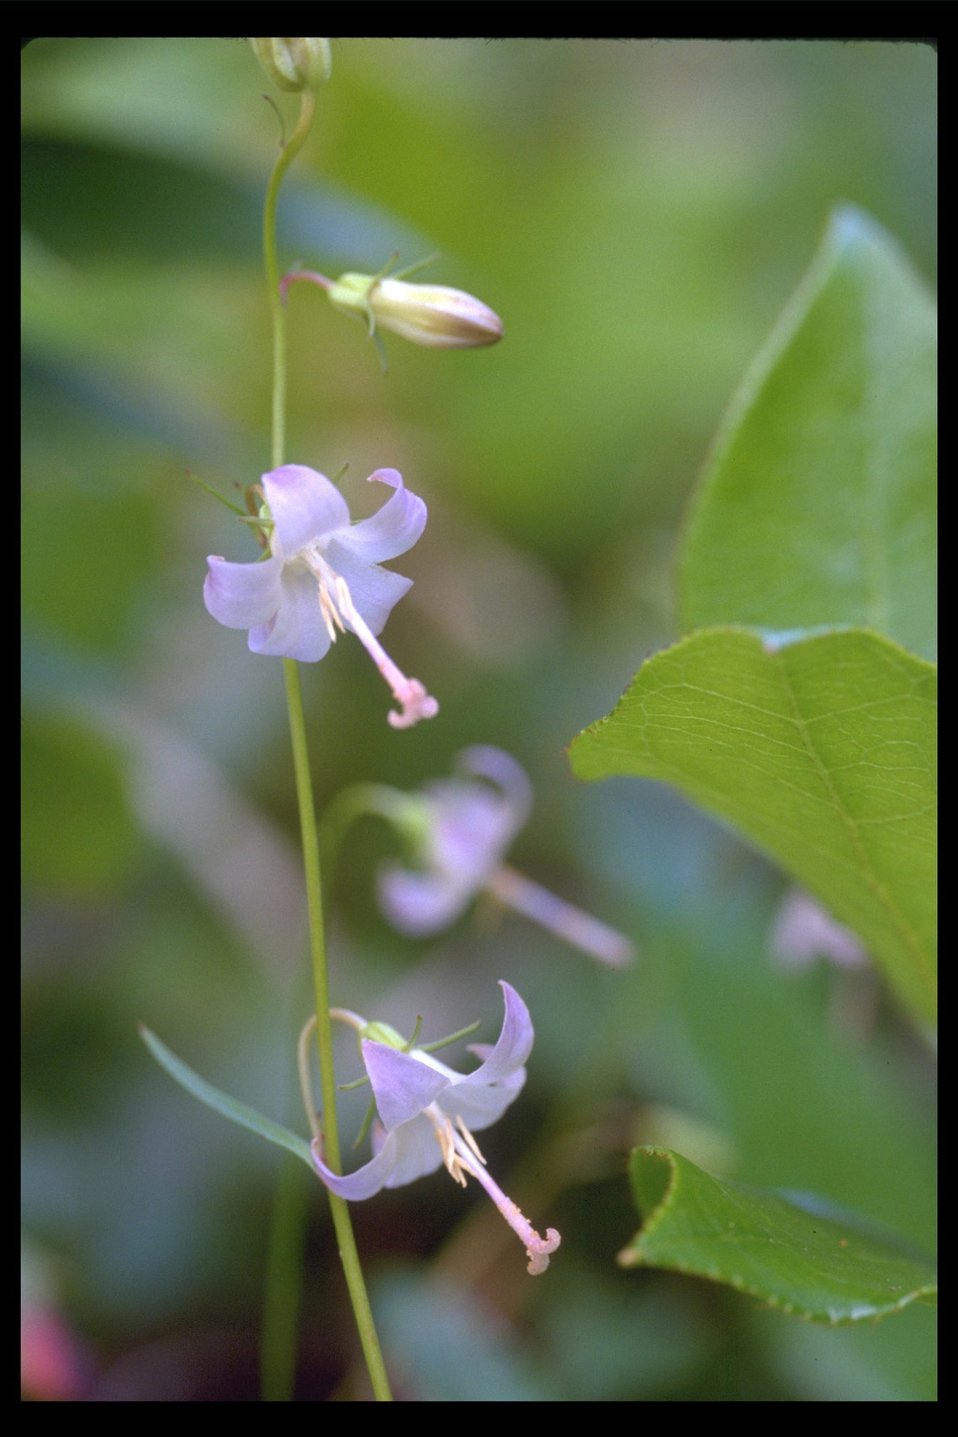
Scouler's Harebell, or Bluebell, (Campanula Scouleri) at Upper Trail Creek.